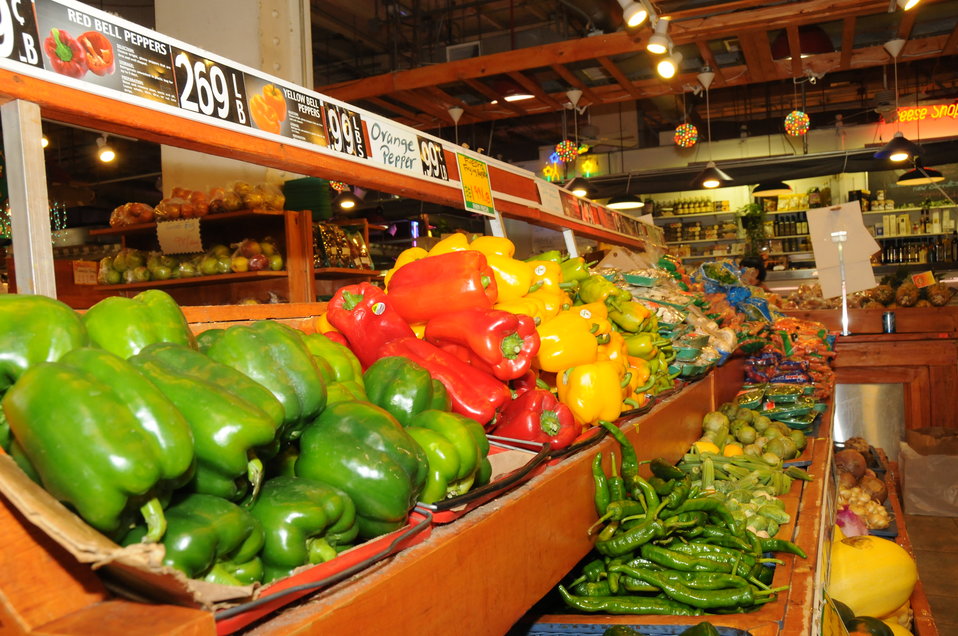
The Reading Terminal Market offers produce fresh from the field to the people of Philadelphia, PA on April 3, 2009. There are Amish specialties, fruits, vegetables, meats, seafood, and poultry. Reading Terminal Market opened for business in 1892 with approximately 78,000 square feet and almost 800 spaces for vendors. The Market was revitalized in the 1990’s and today is still the gastronomic bazaar that its original planners had envisioned. Many of the historic Market stands survived the reconstruction and are once again filled with local produce, fresh eggs, milk, meats, poultry, seafood, handmade crafts, jewelry, and clothing. The Market is home to more than 80 merchants, two of whom are descendants of the original stand holders from a century before.